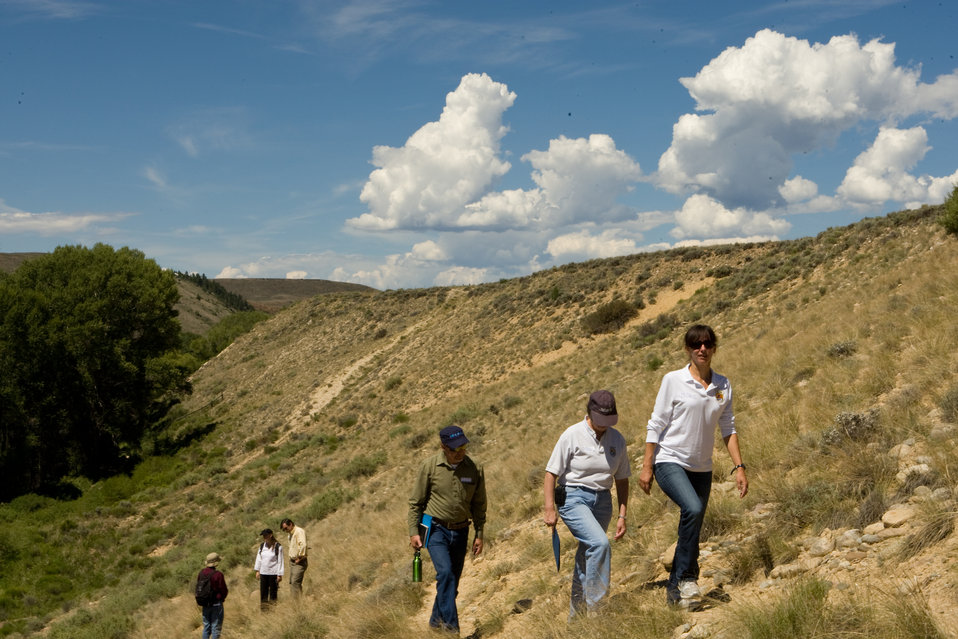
Colorado Rare Plant Conservation Initiative

The Colorado Rare Plant Conservation Initiative (RPCI) is a partnership of 23 statewide and regional agencies, private organizations, and academic institutions working to conserve 121 rare plants in Colorado. As part of these efforts the group developed the Colorado Rare Plant Conservation Strategy, developed Best Management Practices to reduce energy development impacts, addressed climate change, and developed focused strategies for the conservation of individual species at eight priority landscapes. The group has also worked to coordinate volunteer efforts for plant conservation across the state.